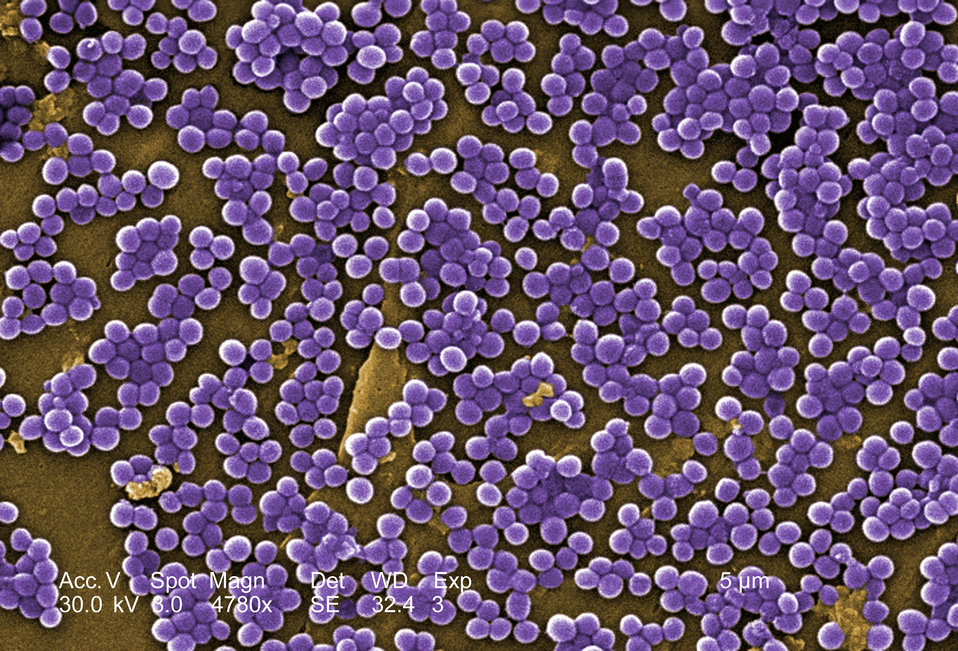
This 2005 colorized scanning electron micrograph (SEM) depicted numerous clumps of methicillin-resistant Staphylococcus aureus bacteria, commonly referred to by the acronym, MRSA; Magnified 4780. Recently recognized outbreaks, or clusters of MRSA in community settings have been associated with strains that have some unique microbiologic and genetic properties, compared with the traditional hospital-based MRSA strains, which suggests some biologic properties, e.g., virulence factors like toxins, may allow the community strains to spread more easily, or cause more skin disease. A common strain named USA300-0114 has caused many such of outbreaks in the United States. See PHIL 7820 for a black and white version of this image.